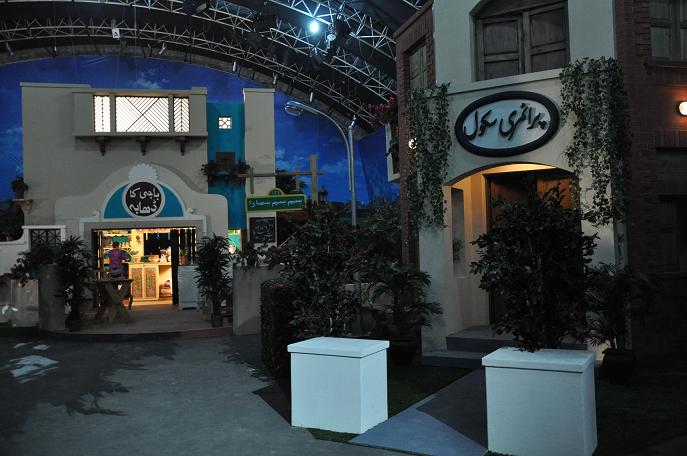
Sim Sim Hamara set.